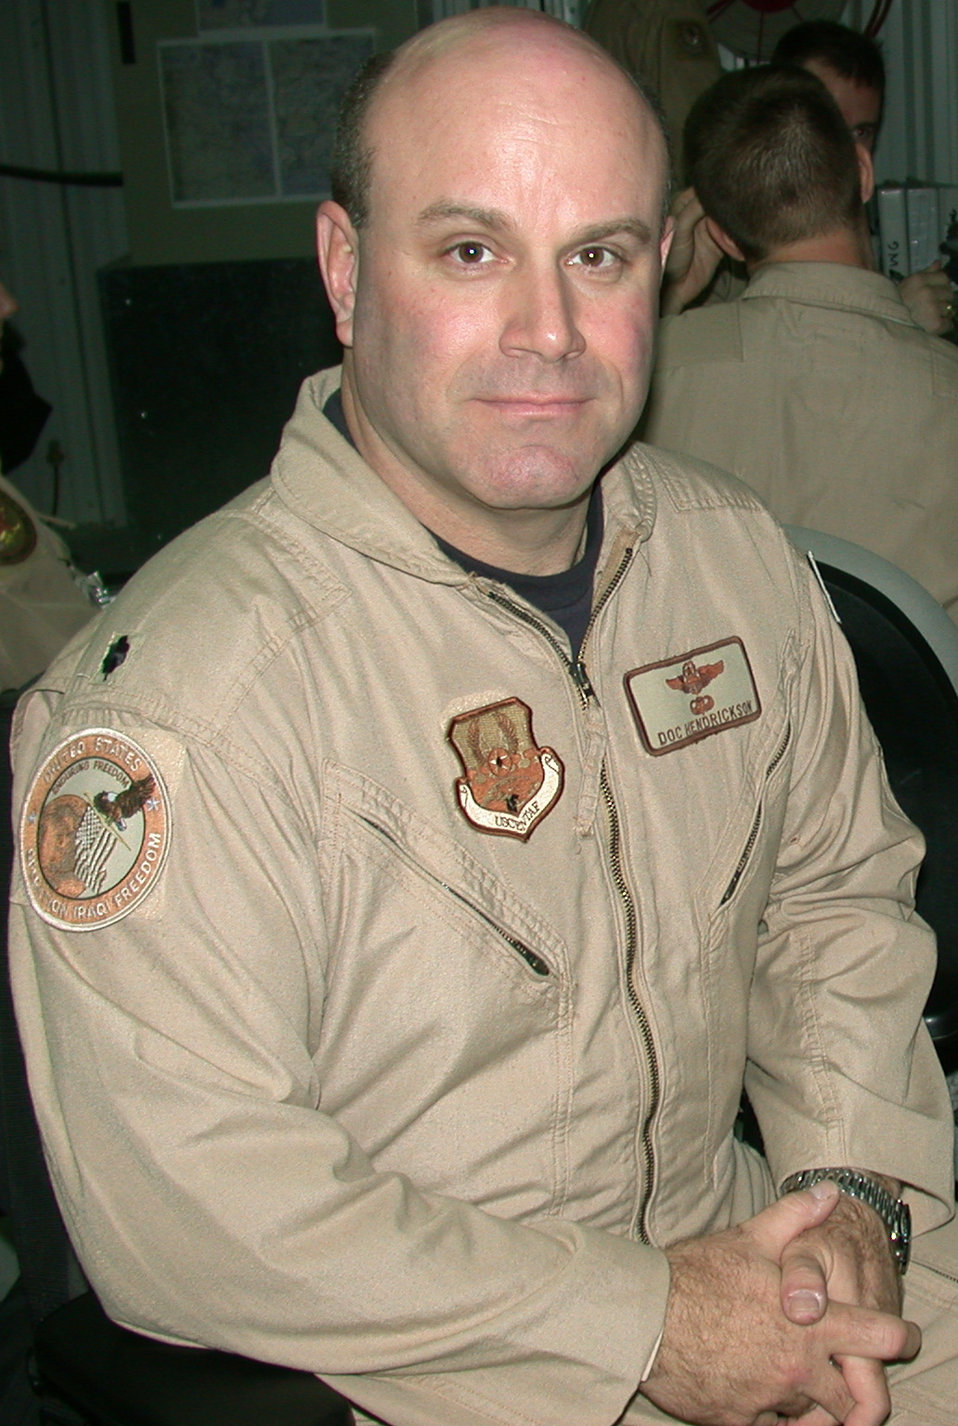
Air mobility man

SOUTHWEST ASIA -- Lt. Col. Bruce Hendrickson works directly to support operations Iraqi Freedom and Enduring Freedom, and Joint Task Force-Horn of Africa with airlift and air refueling taskings. He is the night chief for the Combined Air Operations Center's air mobility division.